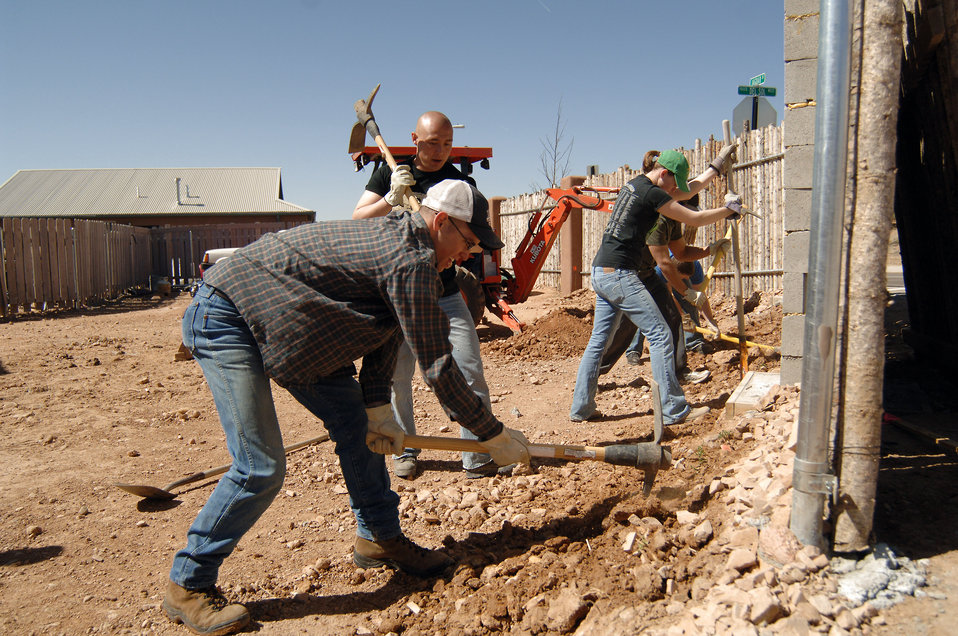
Cadets give up spring break to build homes

Cadet 3rd Class Ben Shoptaugh (front) and Cadet 4th Class Anthony Langdon take their turns with pick-axes as Cadet 2nd Class Dani Rogowski uses a shovel to clear away the broken rocks and dirt and fellow cadets make short work of a land-clearing project in Santa Fe. Cadets Rogowski, Shoptaugh and Langdon are part of the 65 Air Force Academy cadets who are giving up their spring break this week to build homes for the needy in Santa Fe, N.M.; Cody, Wyoming; El Paso, Texas; and Beaumont, Texas.